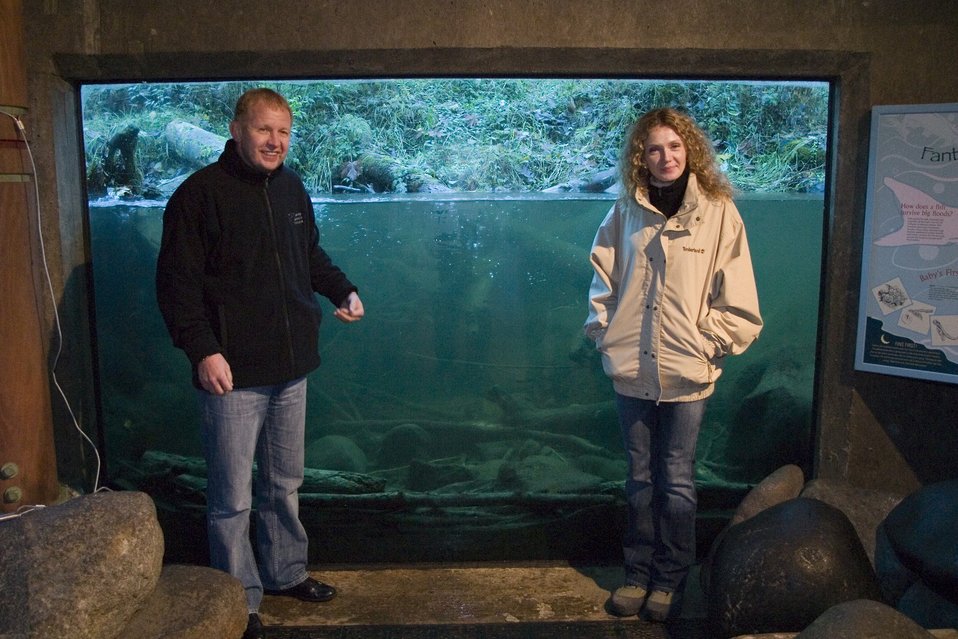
Alexander Chistyakov, Vice-Governor of Kamchatka, Oksana Rudenko Kamchatka Regional Administrator listen as information about BLM's fish viewing structure is translated.